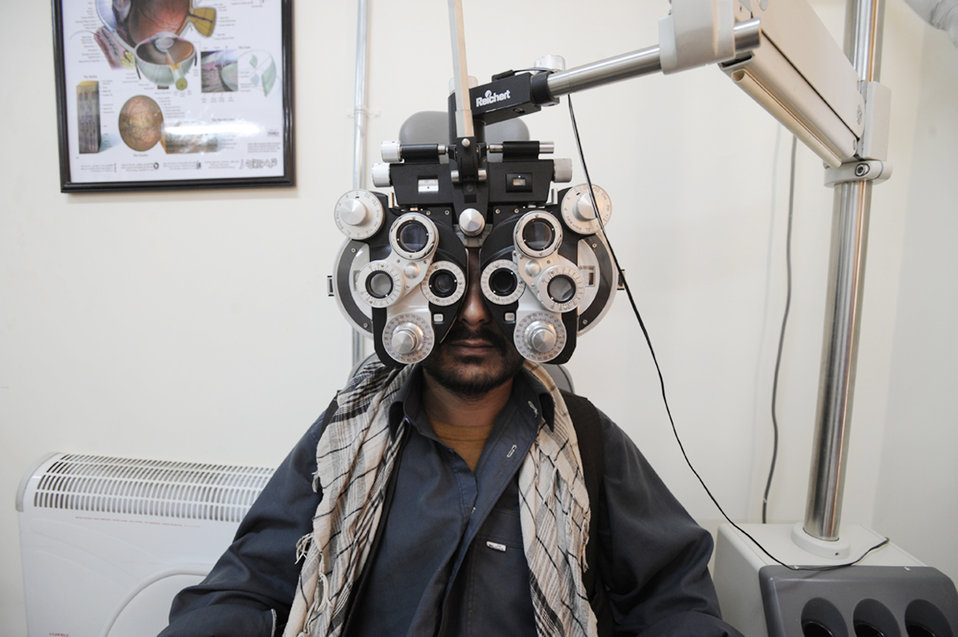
Airmen advise Afghan medical mission

A recruit for the Afghan national army has his vision screened during medical inprocessing Aug 2,2009 at the Kabul Military Training Center in Afghanistan. The medical screening process consists of a drug urinalysis, physical screening and eye exam.